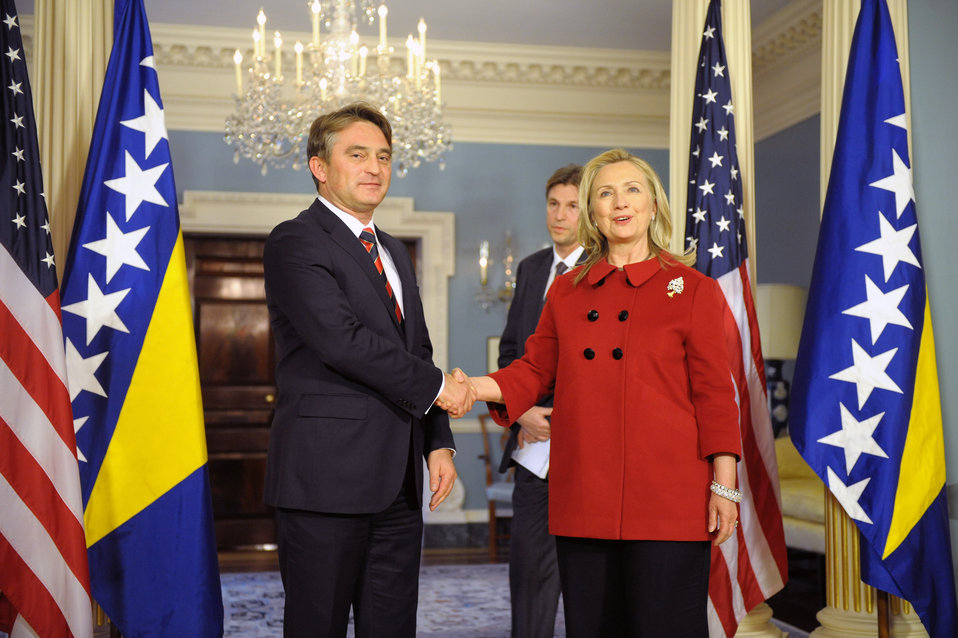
Secretary Clinton Meets With President of Bosnia and Herzegovina Zeljko Komsic

U.S. Secretary of State Hillary Rodham Clinton meets with President of Bosnia and Herzegovina Zeljko Komsic, at the U.S. Department of State in Washington, D.C., on December 13, 2011.